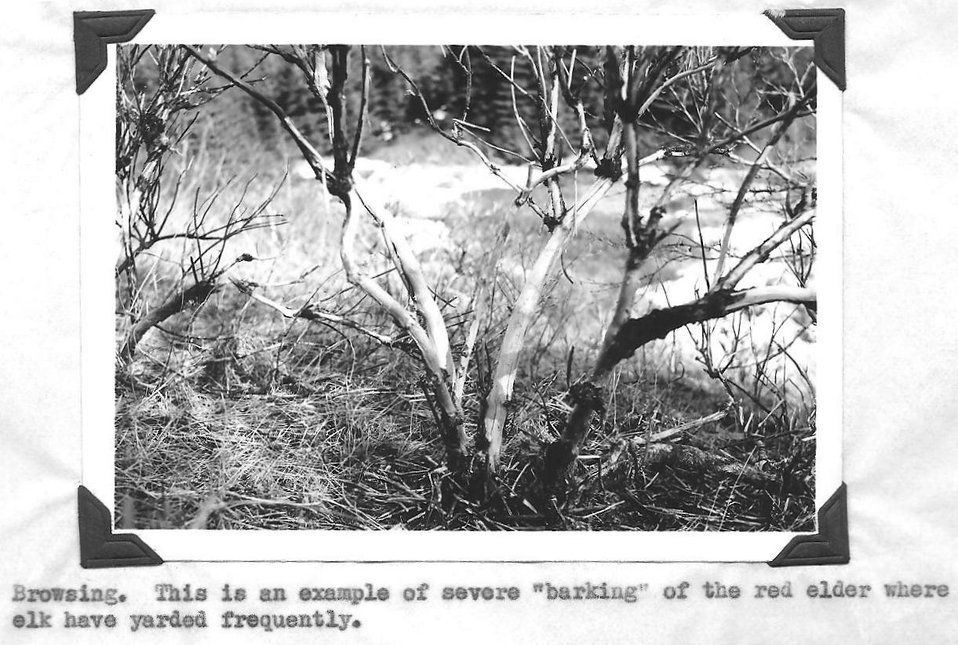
(1949) Elk Browsing

Credit: USFWS

Source and Contact: Kodiak National Wildlife Refuge